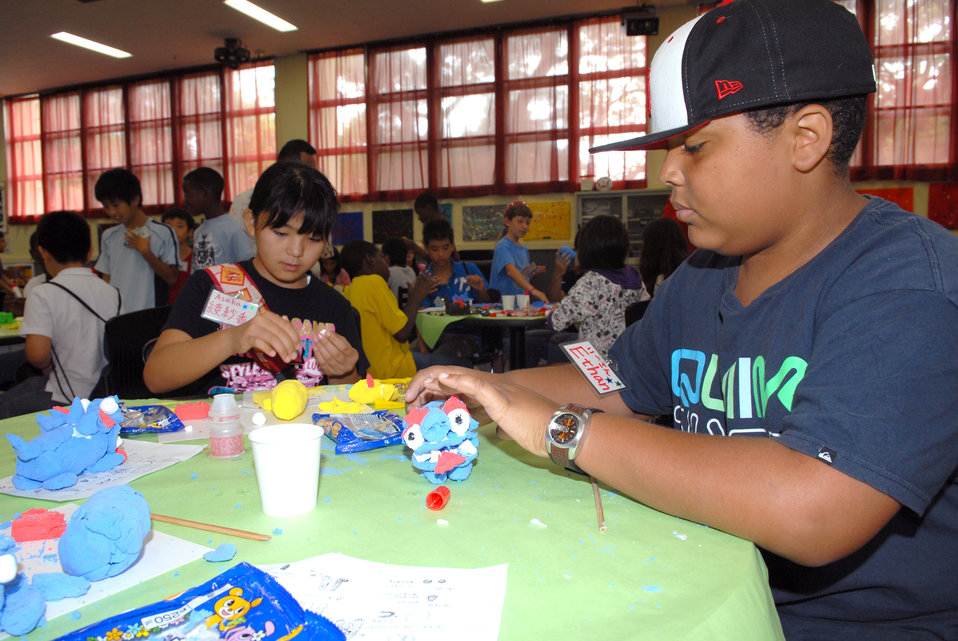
American, Japanese children

Asaka Tamaki (left) and partner Ethan Stewart work on their Shi-Shi dogs together Aug. 5, 2010, at Kadena Air Base, Japan. The two children took part with about 40 others in an international exchange program organized by the Kadena Youth Center and the Chatan Town Lions Club here.